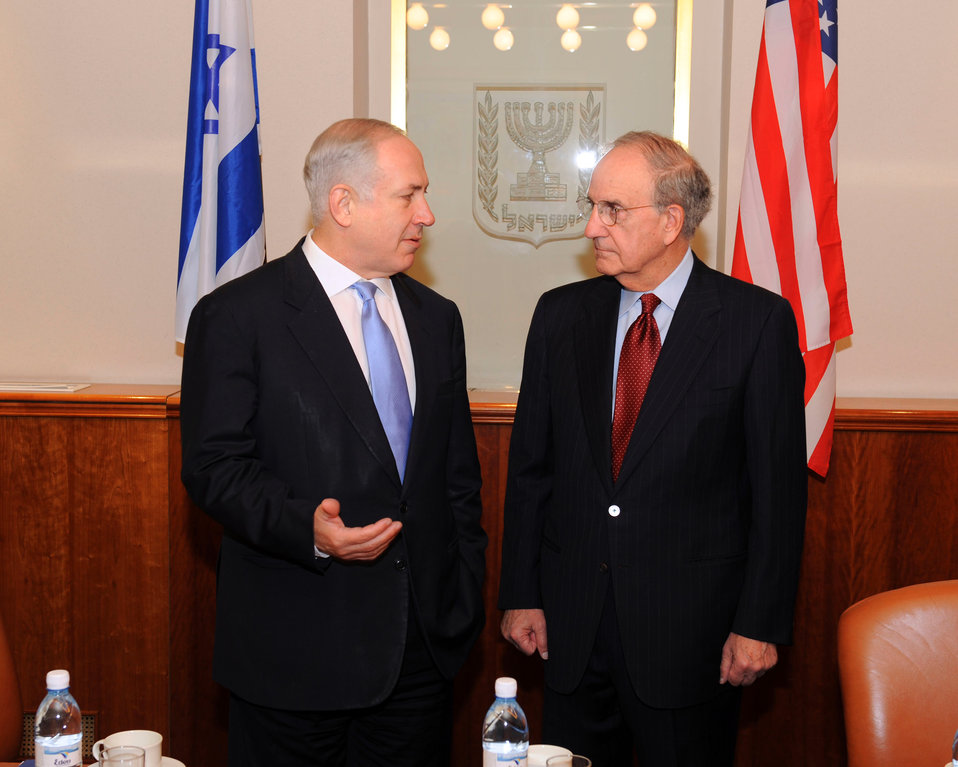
Special Envoy Mitchell Meets With Israeli Prime Minister

U.S. Special Envoy to the Middle East George J. Mitchell meeting with Israeli Prime Minister Benjamin Netanyahu at the Prime Minister Office in Jerusalem October 30, 2009.